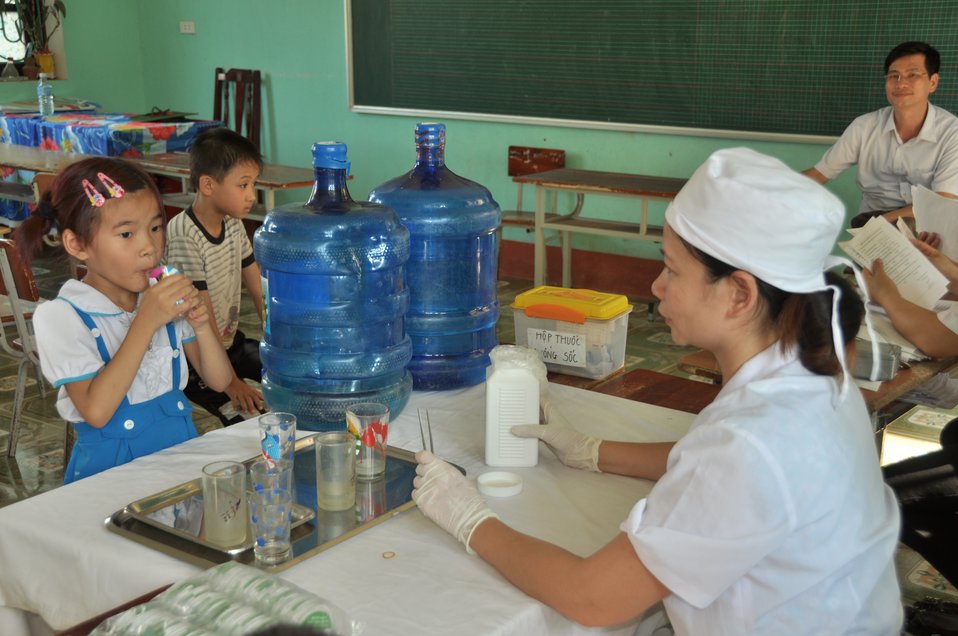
USAID supports deworming education and medication distribution in Bac Giang Province

May 20, 2013